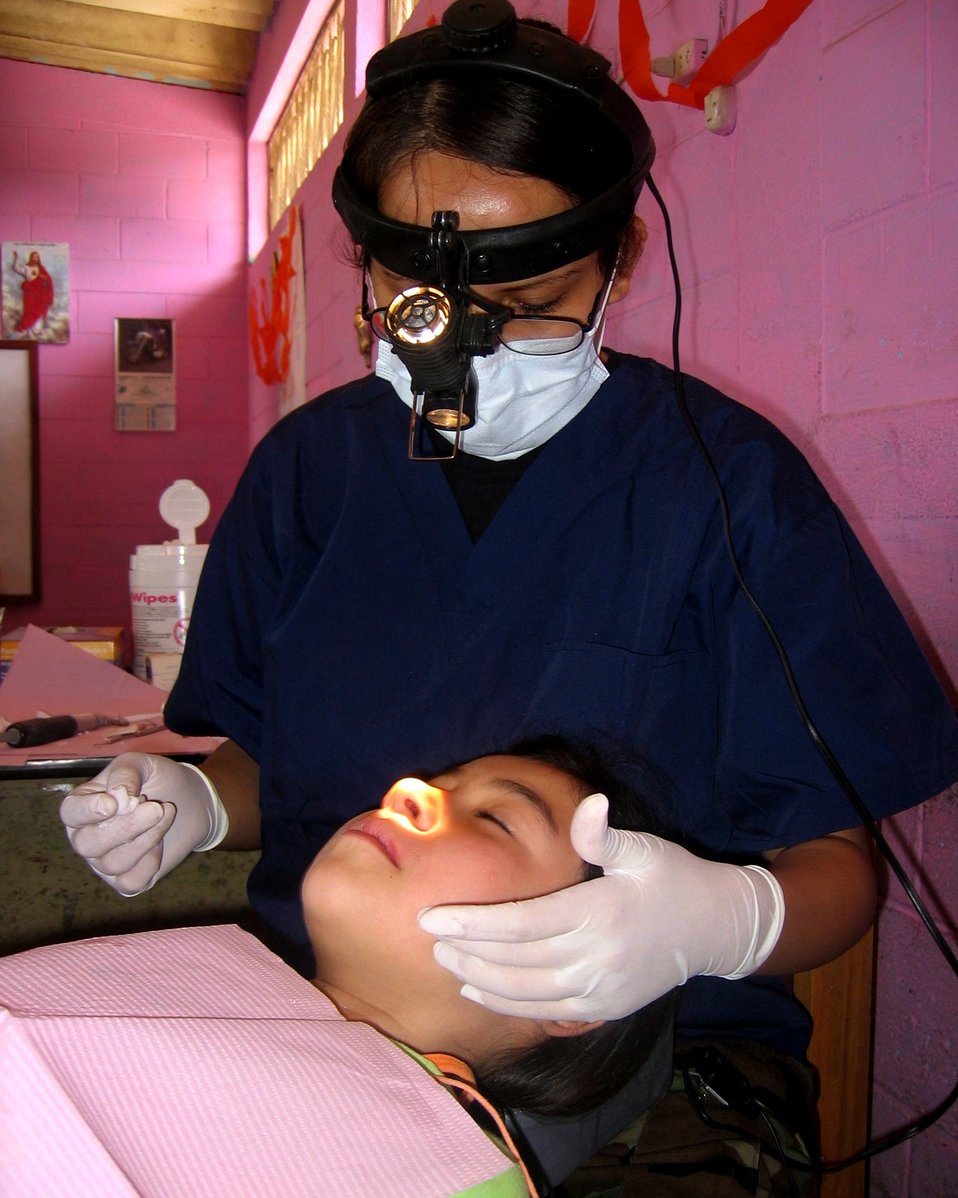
Air Force medics give care to impoverished Guatemalans

Airman 1st Class Laura Valenzuela De La Hoya, a dental technician, completes an examination on a Guatemalan child. Airman Valenzuela De La Hoya, stationed at Vandenberg Air Force Base, Calif., helped to extract nearly 900 teeth and restore another 85 during a 10-day humanitarian mission to various regions of Guatemala in April.